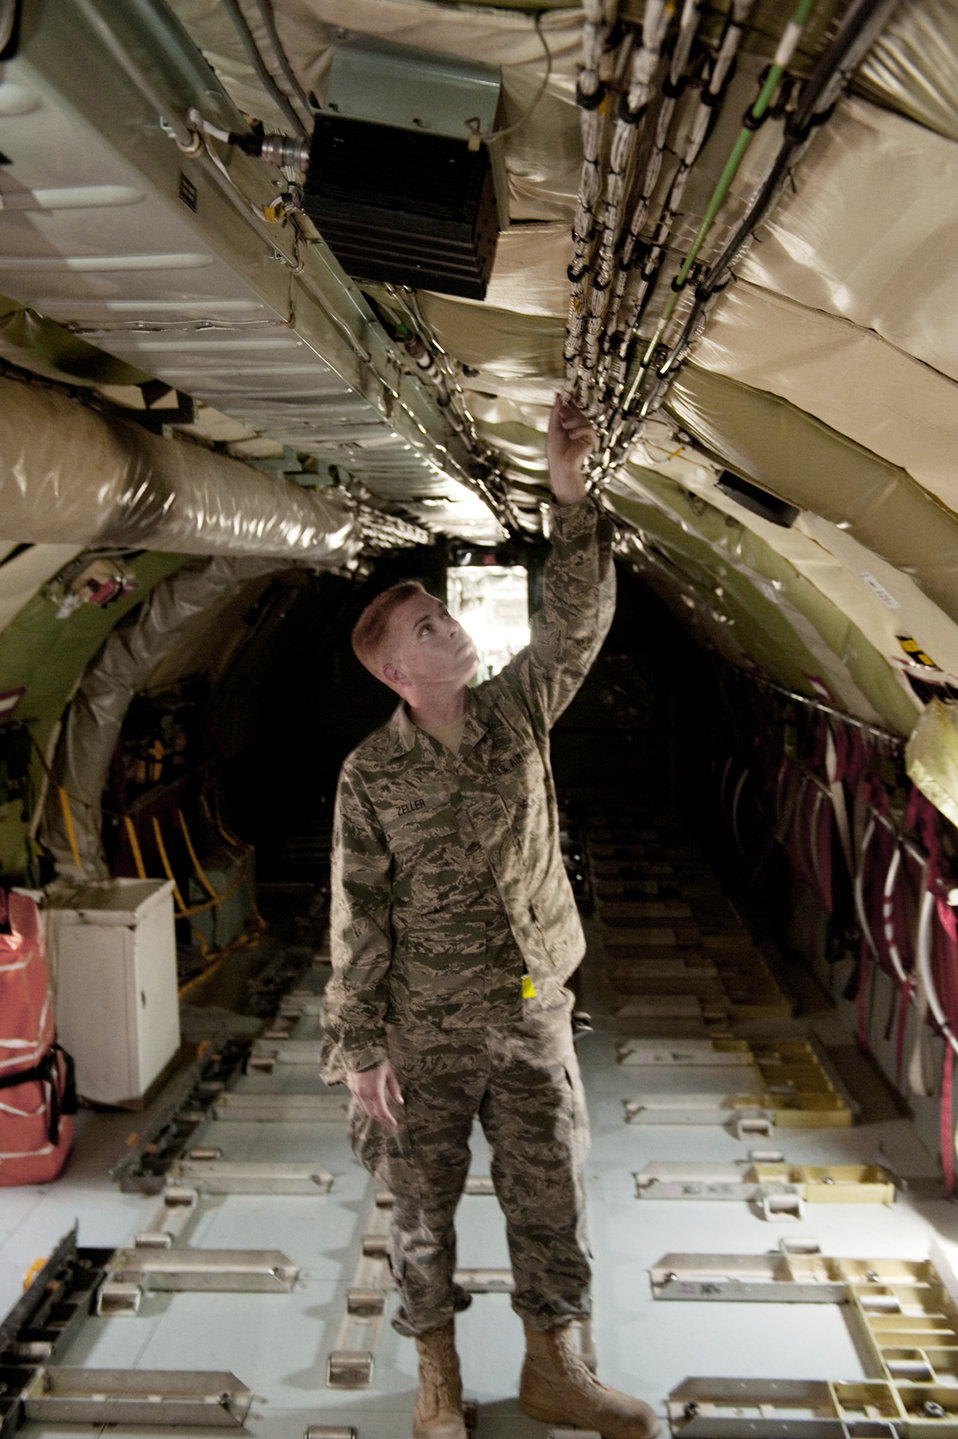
Teamwork keeps tankers flying

Senior Airman Ryne Zeller performs a preflight check to ensure a KC-135 Stratotanker is safe to fly Aug. 11 at an air base in Southwest Asia. The KC-135 provides aerial refueling support to Air Force, Navy and Marine Corps and allied nation aircraft. Airman Zeller is a 340th Aircraft Maintenance Unit aircraft electrical environmental systems technician. He is a native of Chandler, Ariz., and is deployed from the Arizona Air National Guard.